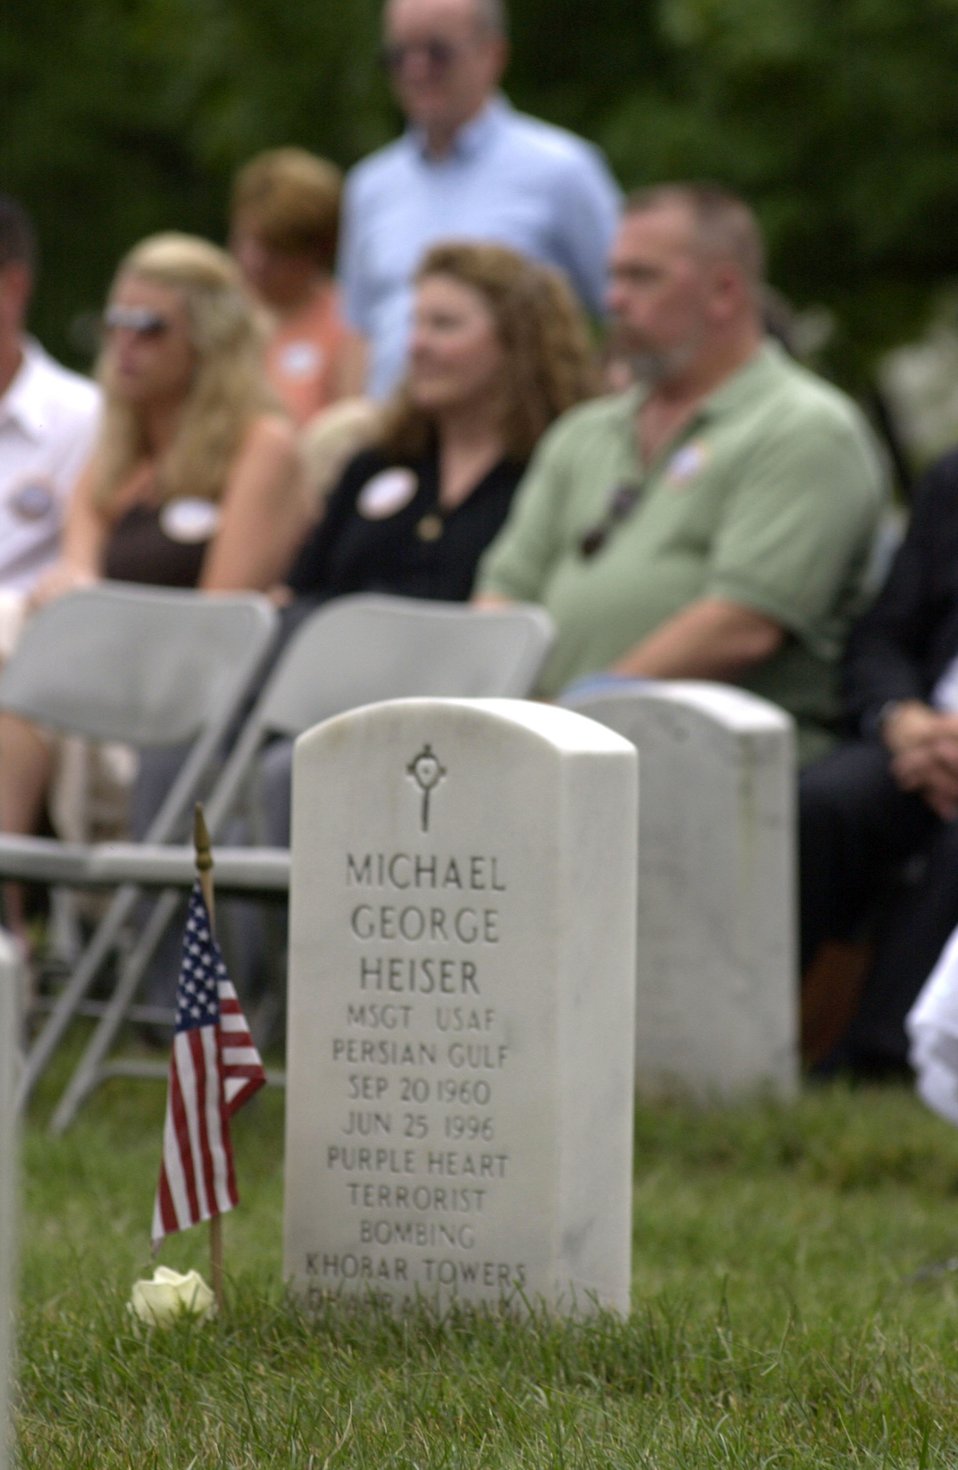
Khobar Towers 10th Anniversary

The headstone of Master Sgt. Michael George Heiser rests at Arlington National Cemetery, Va., near family members and friends gathered at a remembrance ceremony on Sunday, June 25, marking the 10th anniversary of the Khobar Towers bombing. Nineteen Airmen were killed in the terrorist bombing at Dhahran Air Base, Saudi Arabia, on June 25, 1996.